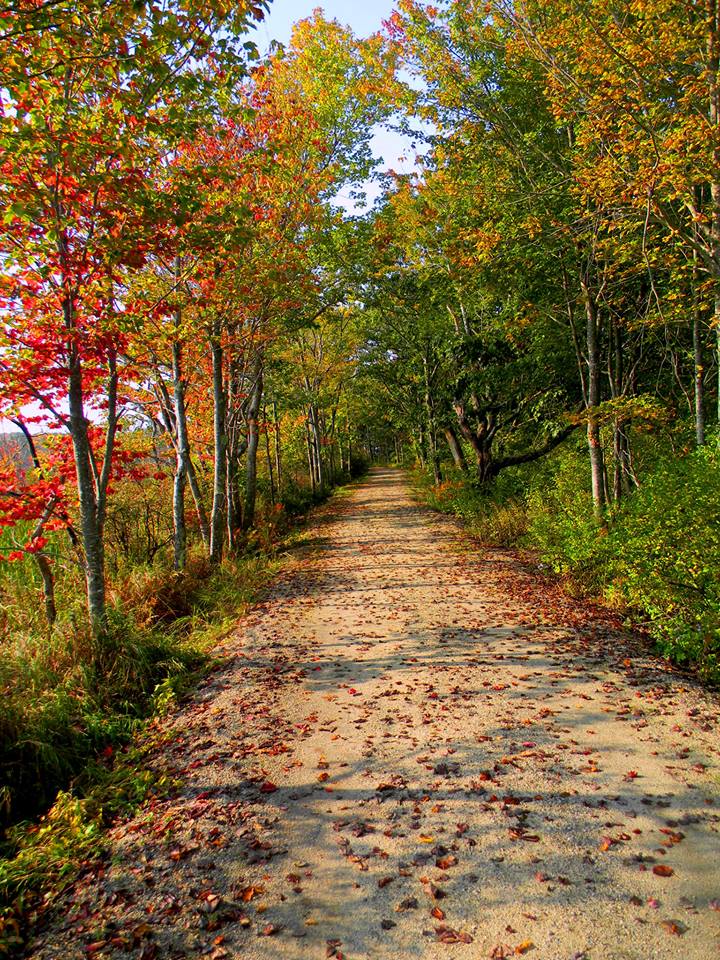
Rachel Carson National Wildlife Refuge

A fall trail beckons at Rachel Carson National Wildlife Refuge in Maine. USFWS